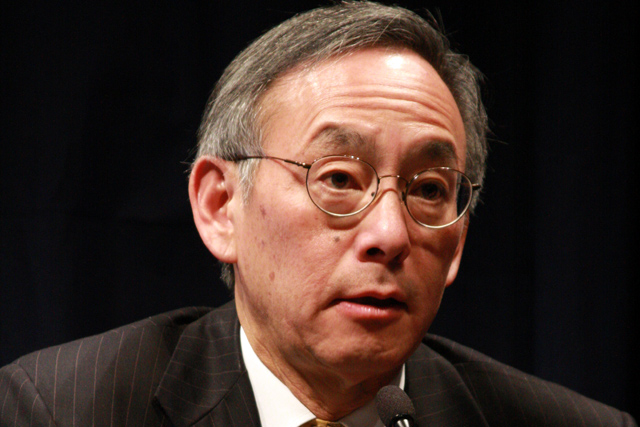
U.S. Secretary of Energy Speaks at COP-15

U.S. Secretary of Energy Steven Chu participates in keynote event at the U.S. Center during COP15 (Conference of the Parties to the UN Framework Convention on Climate Change) in Copenhagen, Denmark December 14, 2009.